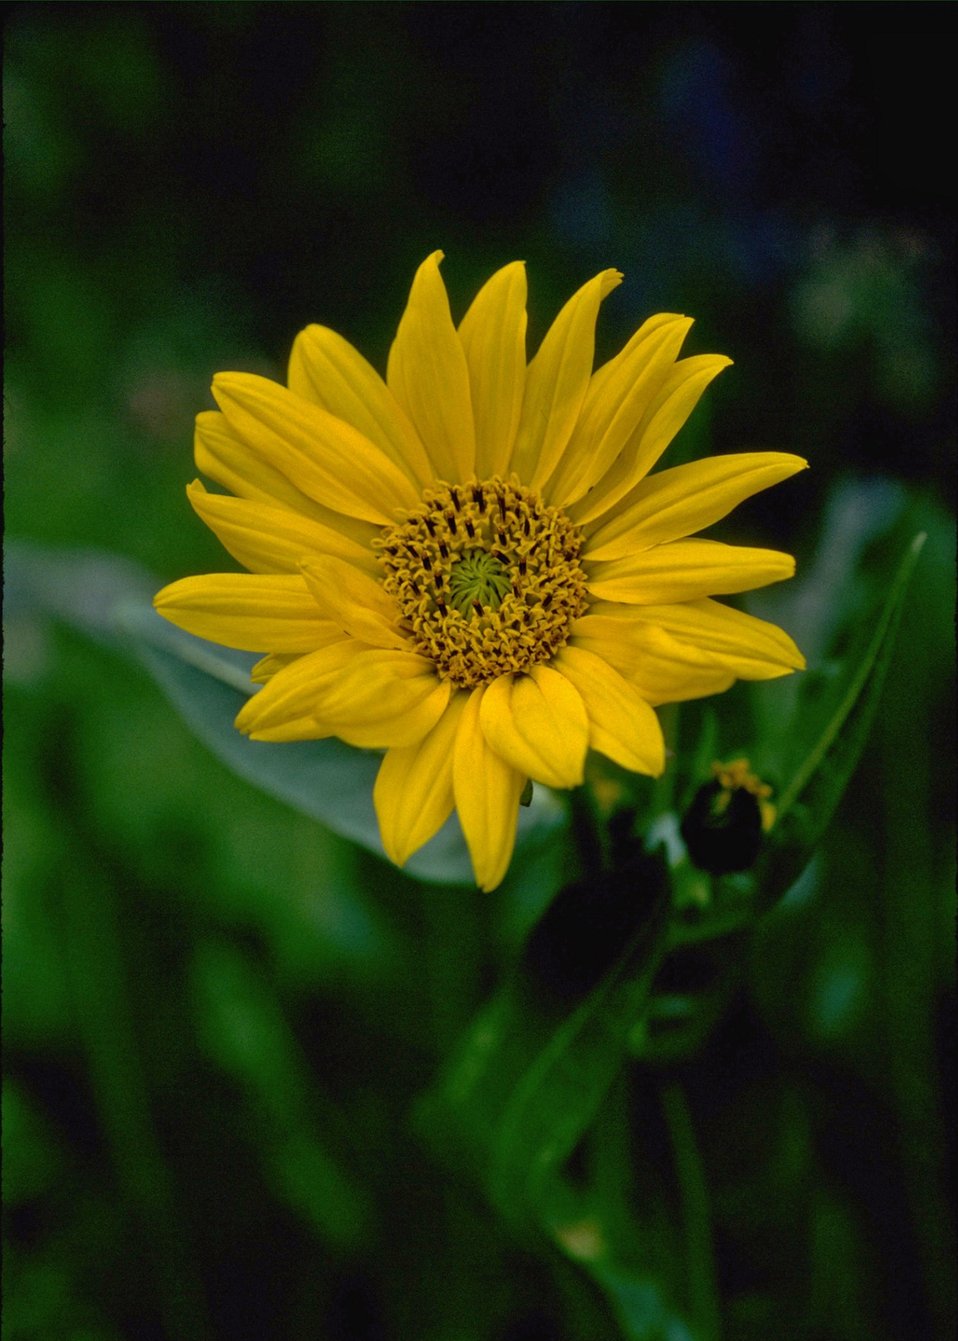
Mule's ears (Wyethia amplexicaulis) in the Pine zone meadows in Harney County in Oregon.